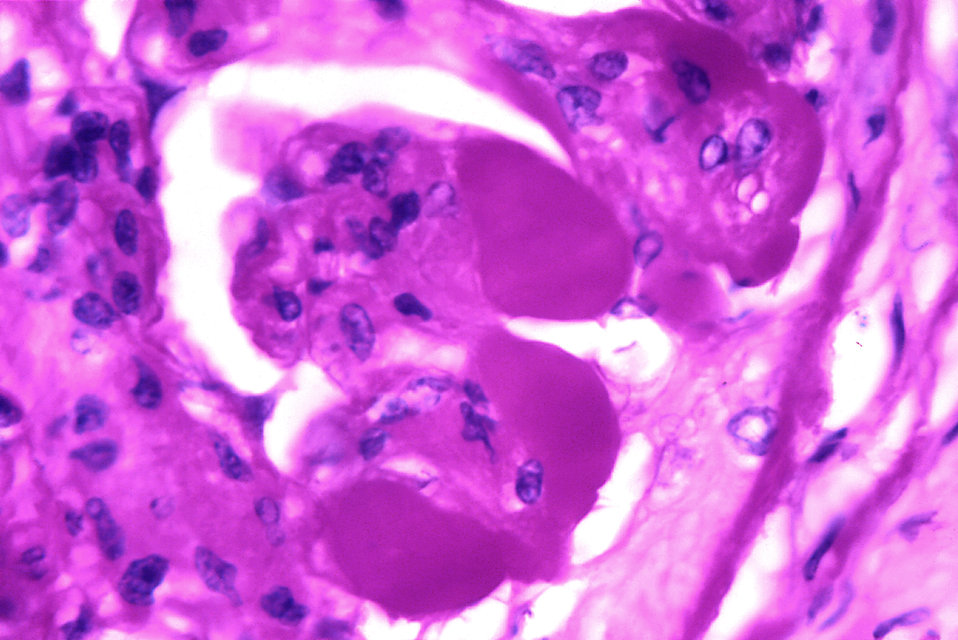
Histopathology of nodular glomerulosclerosis (Kimmelstiel-Wilson syndrome), kidney